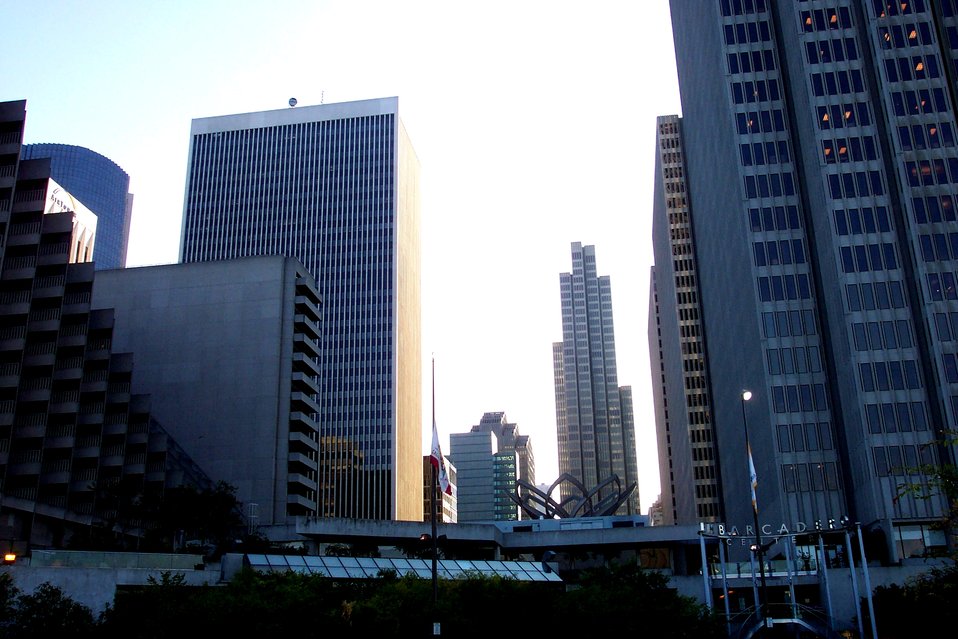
Skyscrapers of downtown San Francisco.